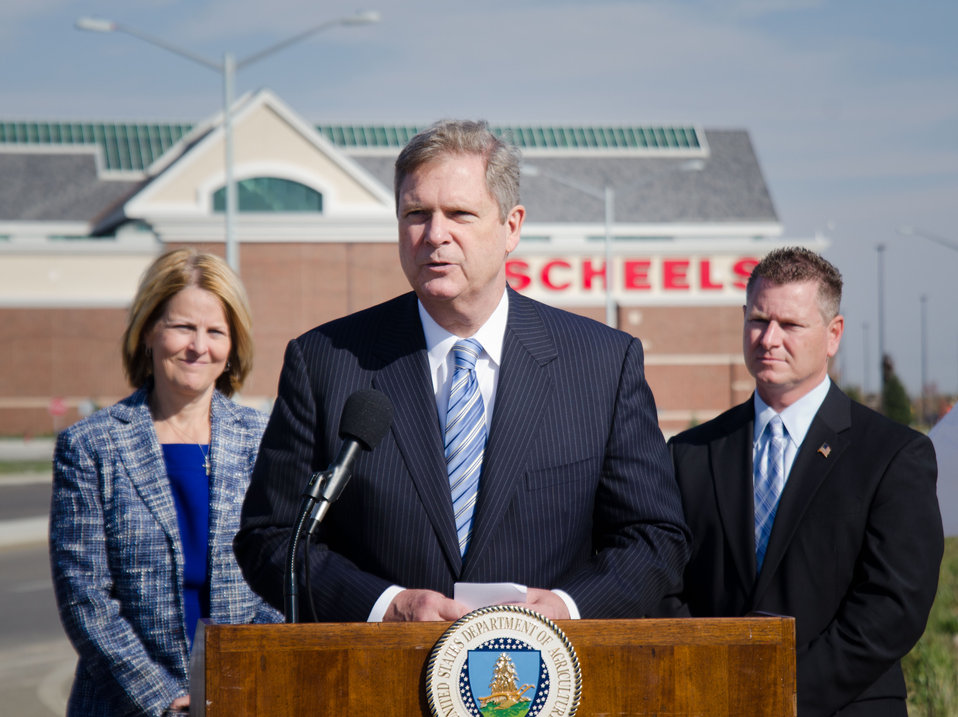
U.S. Department of Agriculture Secretary Tom Vilsack (at podium), Illinois Department of Transportation Acting Secretary of Transportation Ann Schneider (center) and Sangamon County Recorder of Deeds (left) visited a recently completed transportation project that extended the existing MacArthur Boulevard and new interchange with Interstate 72, that brought new businesses and 500 new jobs to Springfield, IL on November 2, 2011. Agriculture Secretary Tom Vilsack discussed the Administration's strategy to strengthen the U.S. economy and to highlight what passage of the American Jobs Act will mean for Illinois. 'The American Jobs Act provides common-sense steps we can take right now to put more people back to work and put more money in the pockets of working Americans, without adding a dime to the deficit,' said Secretary Vilsack. 'In Illinois, this Act will provide a tax cut for over 260,000 businesses, support the jobs of 14,500 teachers and first responders and immediately provide a job for over 20,700 construction workers through infrastructure improvements. A typical household in Illinois will receive a tax cut of around $1,640.'